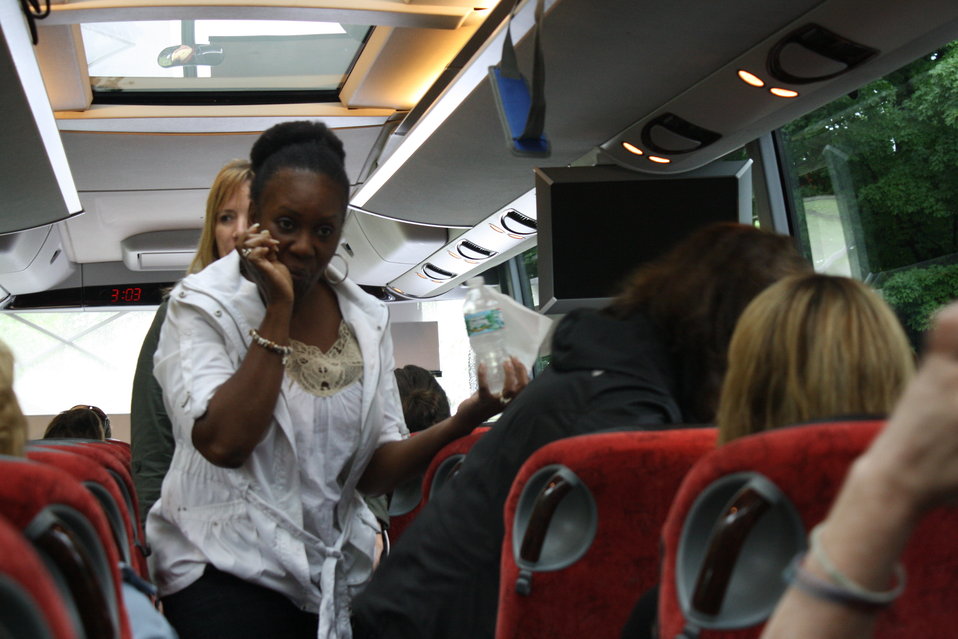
Nashua National Fish Hatchery welcomes regional office employees

Leaving the hatchery.